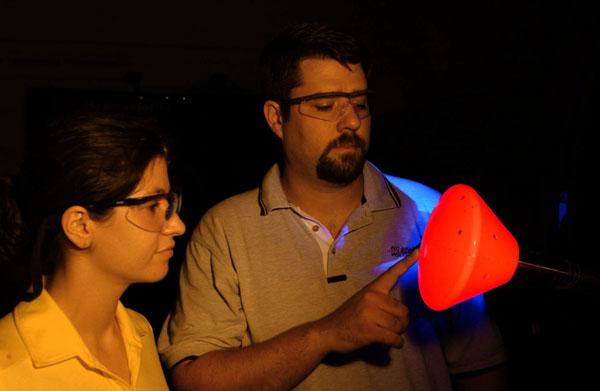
Arnold teams provide NASA with test data

University of Maryland graduate student Inna Kurits and Tunnel 9 project engineer Joe Norris examine the illuminated Temperature Sensitive Paint coating on the NASA crew exploration vehicle model prior to a run Feb. 1 at Arnold Air Force Base, Tenn. Two teams at Arnold Engineering Development Center's Hypervelocity Wind Tunnel 9 conducted tests for NASA's next crew exploration vehicle.